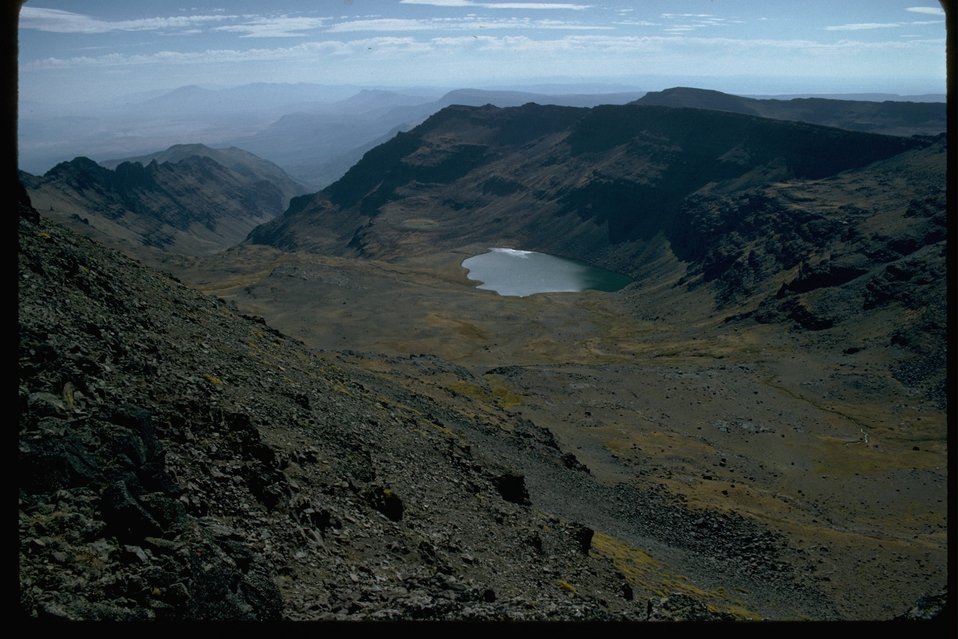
Wild Horse Lake and Canyon at Steens Mountain.